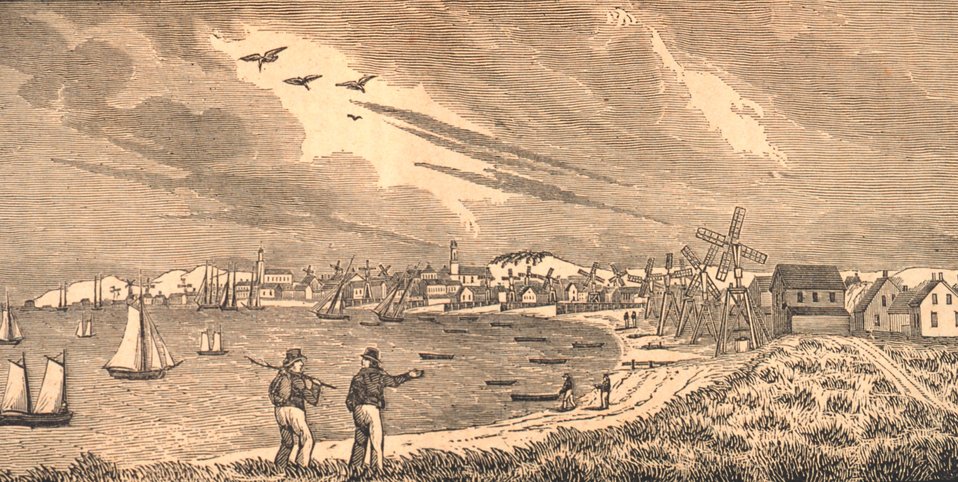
View from the northeastern edge of Provincetown. The windmills were used in the the production of salt. The high sand dunes added to the unique appearance of this Cape Cod town. In: Historical Collections ... of Every Town in Massachusetts. 1841.